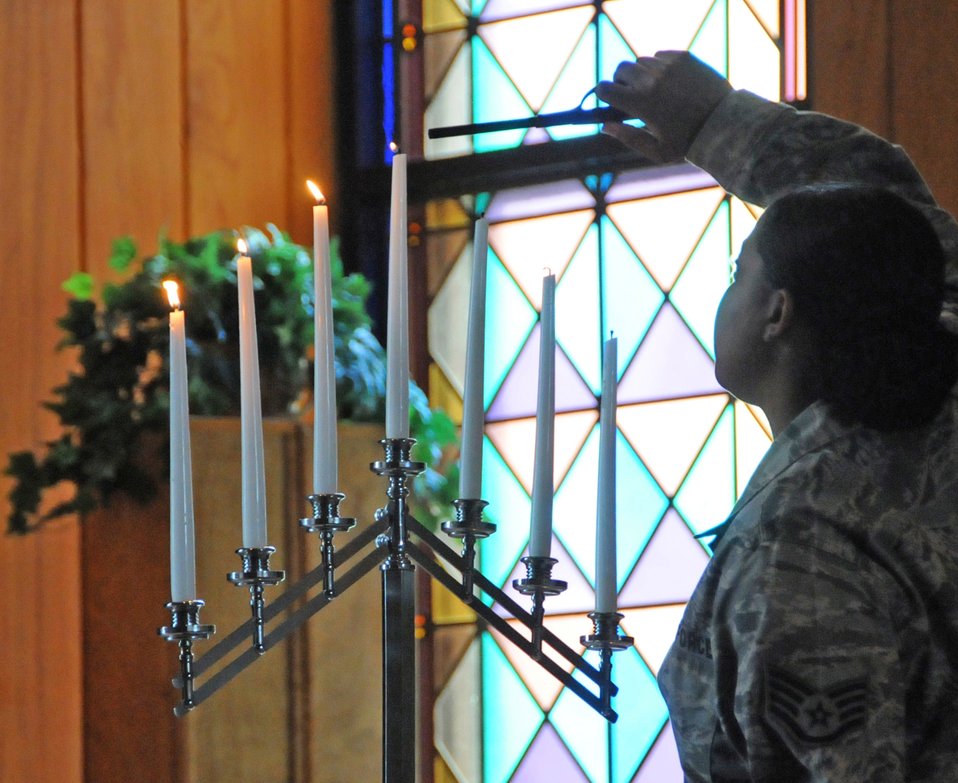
We remember

Staff Sgt. Tomeka Gordon lights candles for a noon service in the Triangle Chapel at Keesler Air Force Base, Miss., in memory of the people who lost their lives in the terrorist attacks on 9/11.